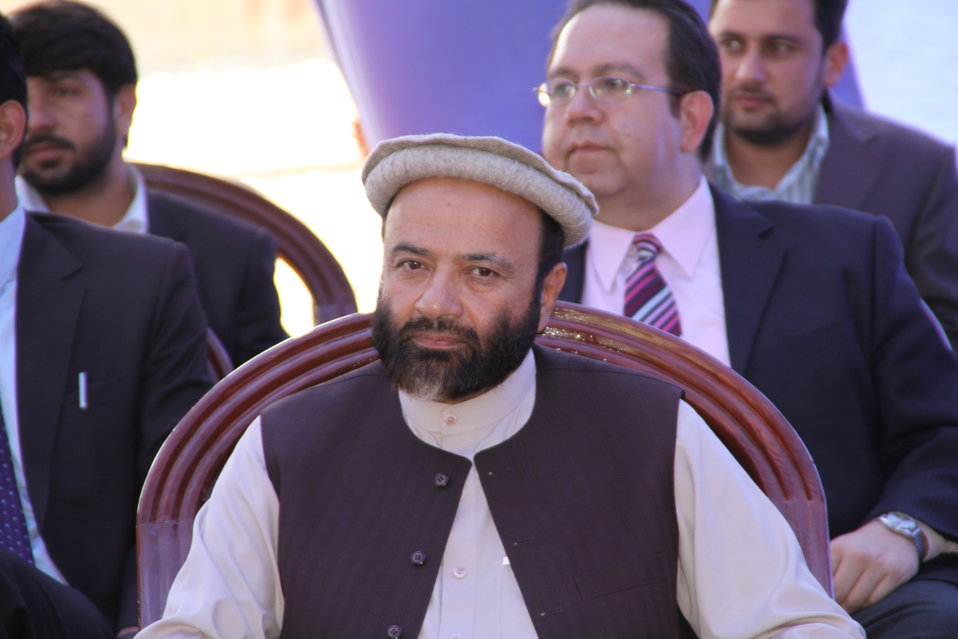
105 MW Tarakhil Power Plant Handover